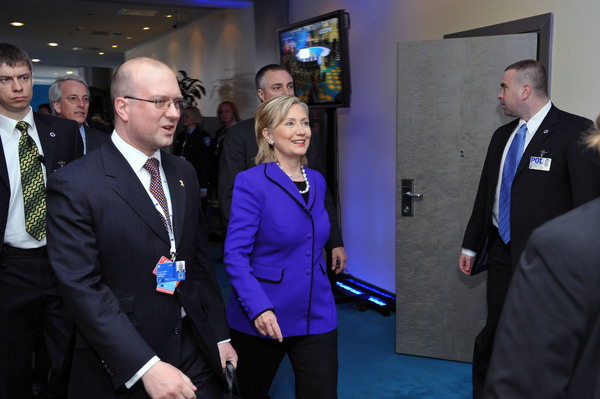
Secretary Clinton at NATO Foreign Ministers Meeting in Estonia

U.S. Secretary of State Hillary Rodham Clinton walks to the NATO-U.S. Bilateral Meeting in Tallinn, Estonia, April 22, 2010.